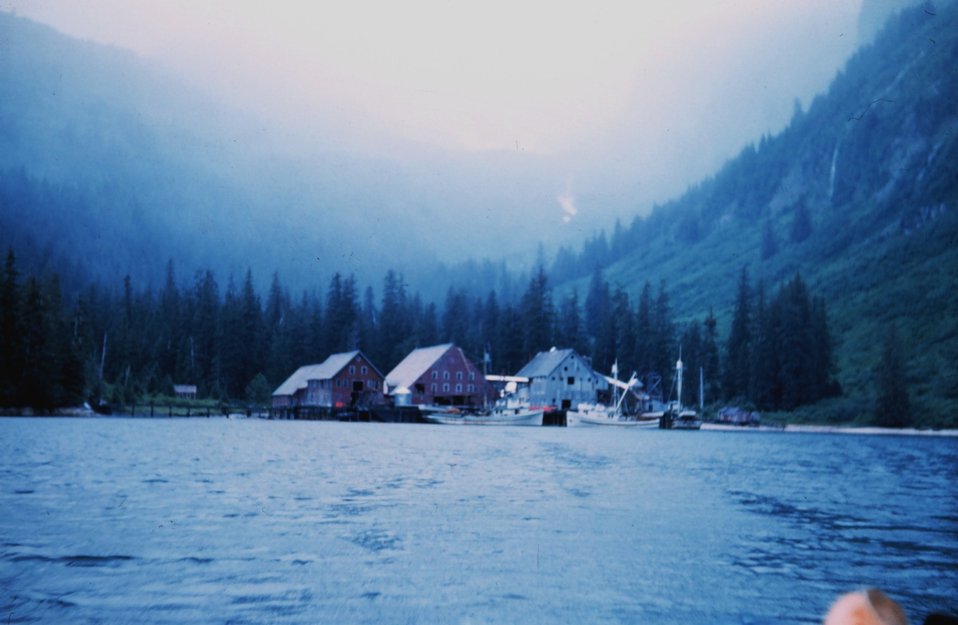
The herring plant at Big Port Walter